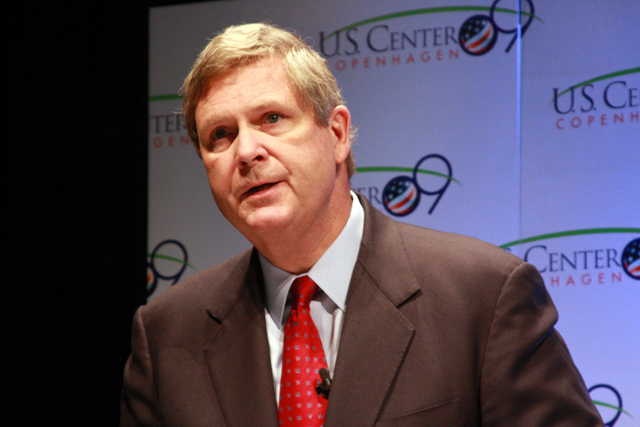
U.S. Secretary of Agriculture Speaks at COP-15

U.S. Secretary of Agriculture Tom Vilsack participates in keynote event at the U.S. Center during COP15 (Conference of the Parties to the UN Framework Convention on Climate Change) in Copenhagen, Denmark December 15, 2009.